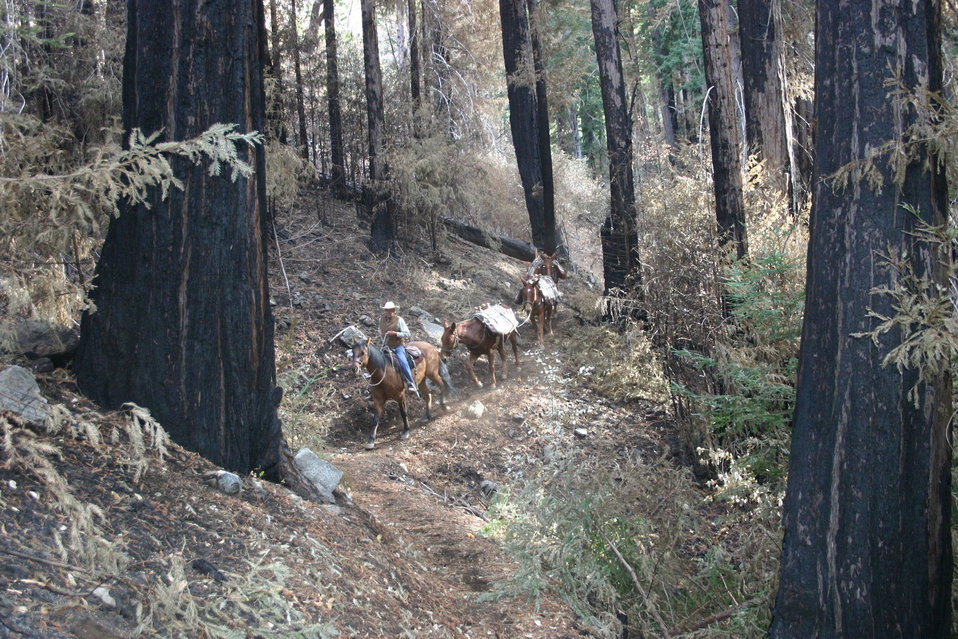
Mule strings on Pine Ridge Trail in the Ventana Wilderness (post fires 2008), in the Los Padres National Forest, Monterey County, CA., on November 21, 2008.